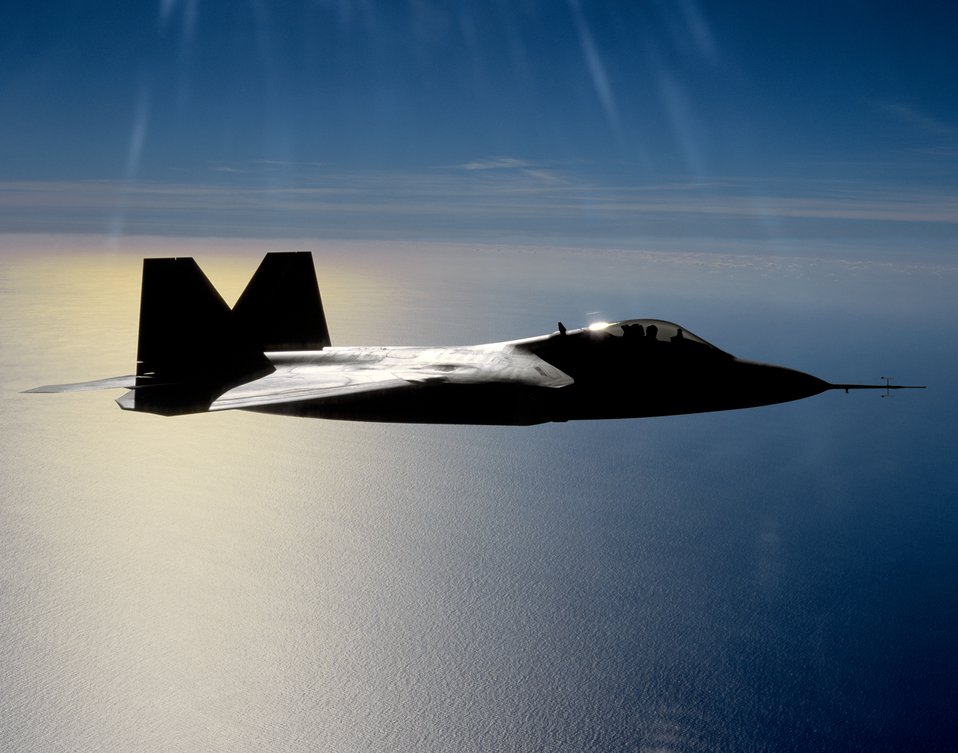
Raptor over water

OVER CALIFORNIA -- An F/A-22 Raptor flies a training mission here.